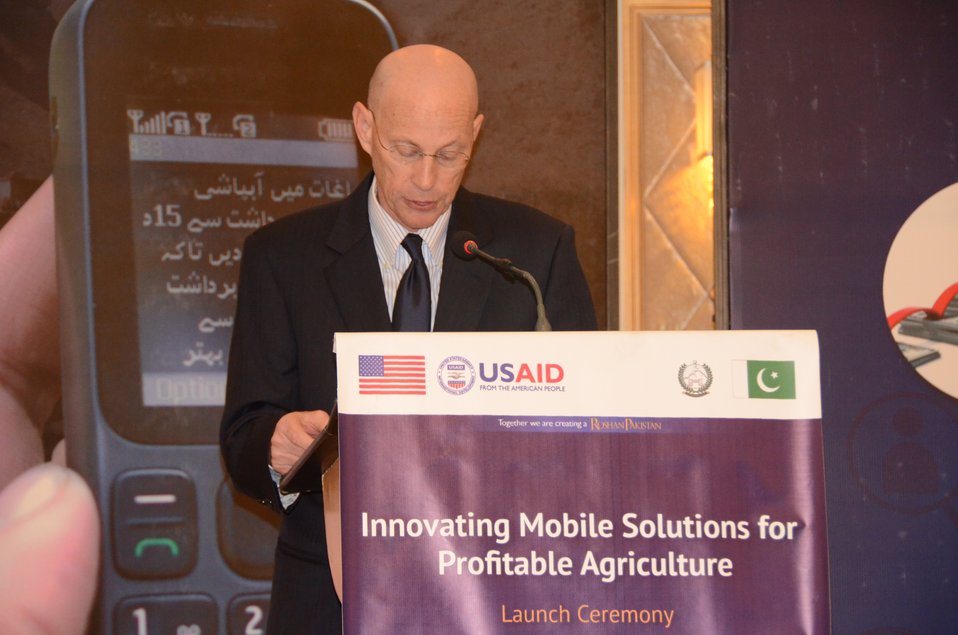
Gregory Gottlieb Mission Director USAID addressing